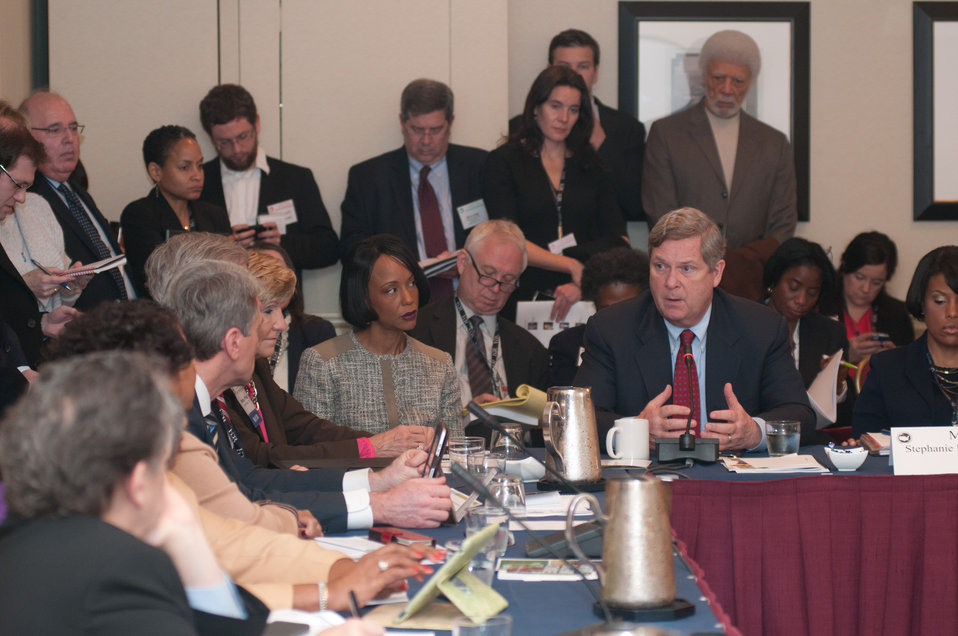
Agriculture Secretary Thomas Vilsack, (at end table with red tie) listens and responds to questions from mayors, during the United States Conference of Mayors 81st Winter Meeting, Food Policy session in Washington D.C., on Thursday, Jan 17, 2013. Some of his responses highlighted the Supplemental Nutrition Assistance Program (SNAP), Know your Farmer Know your Food (www.usda.gov/wps/portal/usda/usdahome?navid=KYF COMPASS) and many other ways that rural America makes a difference.